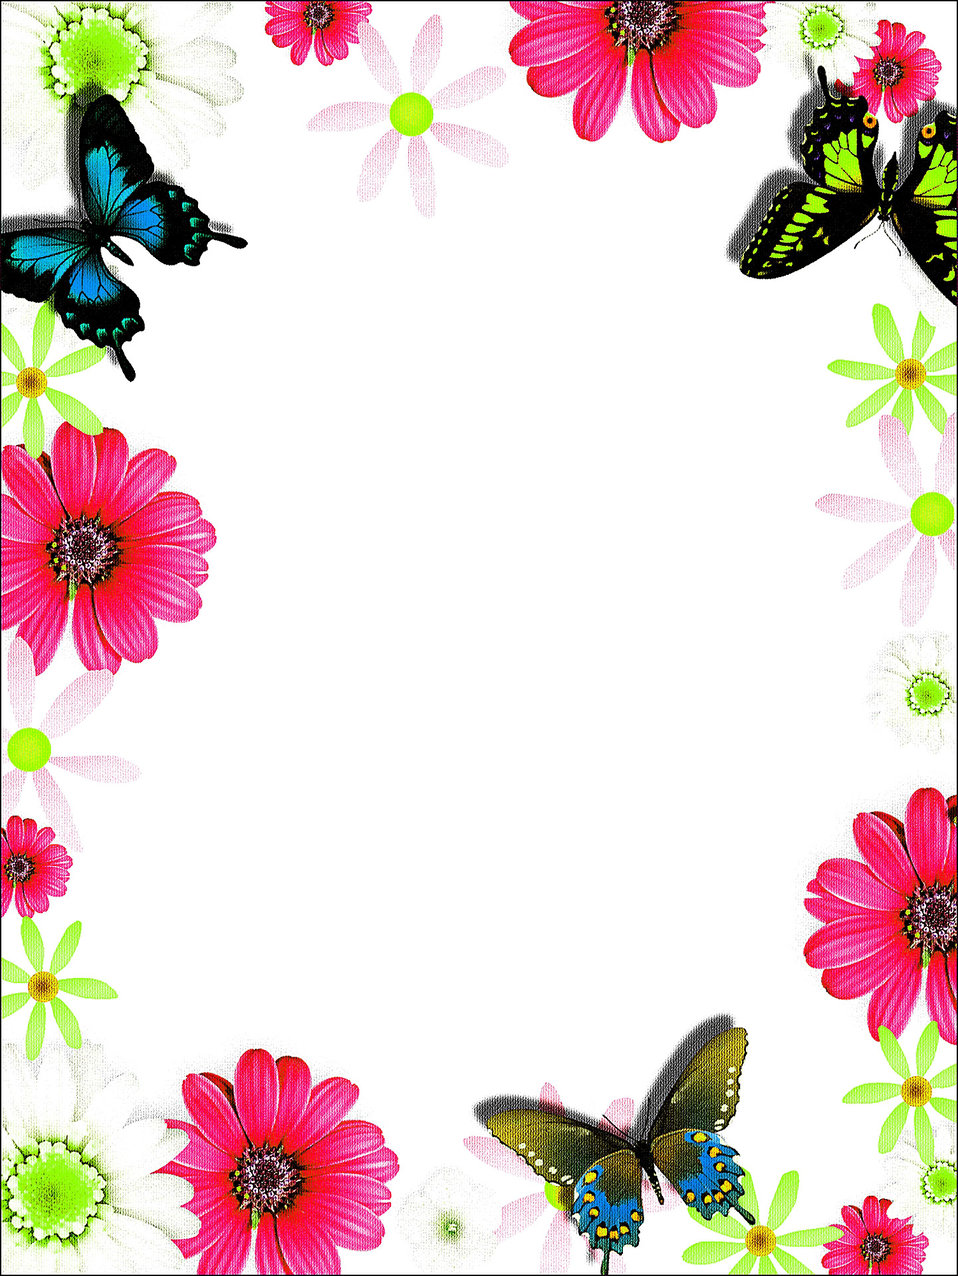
Notepaper summer in plain structure.